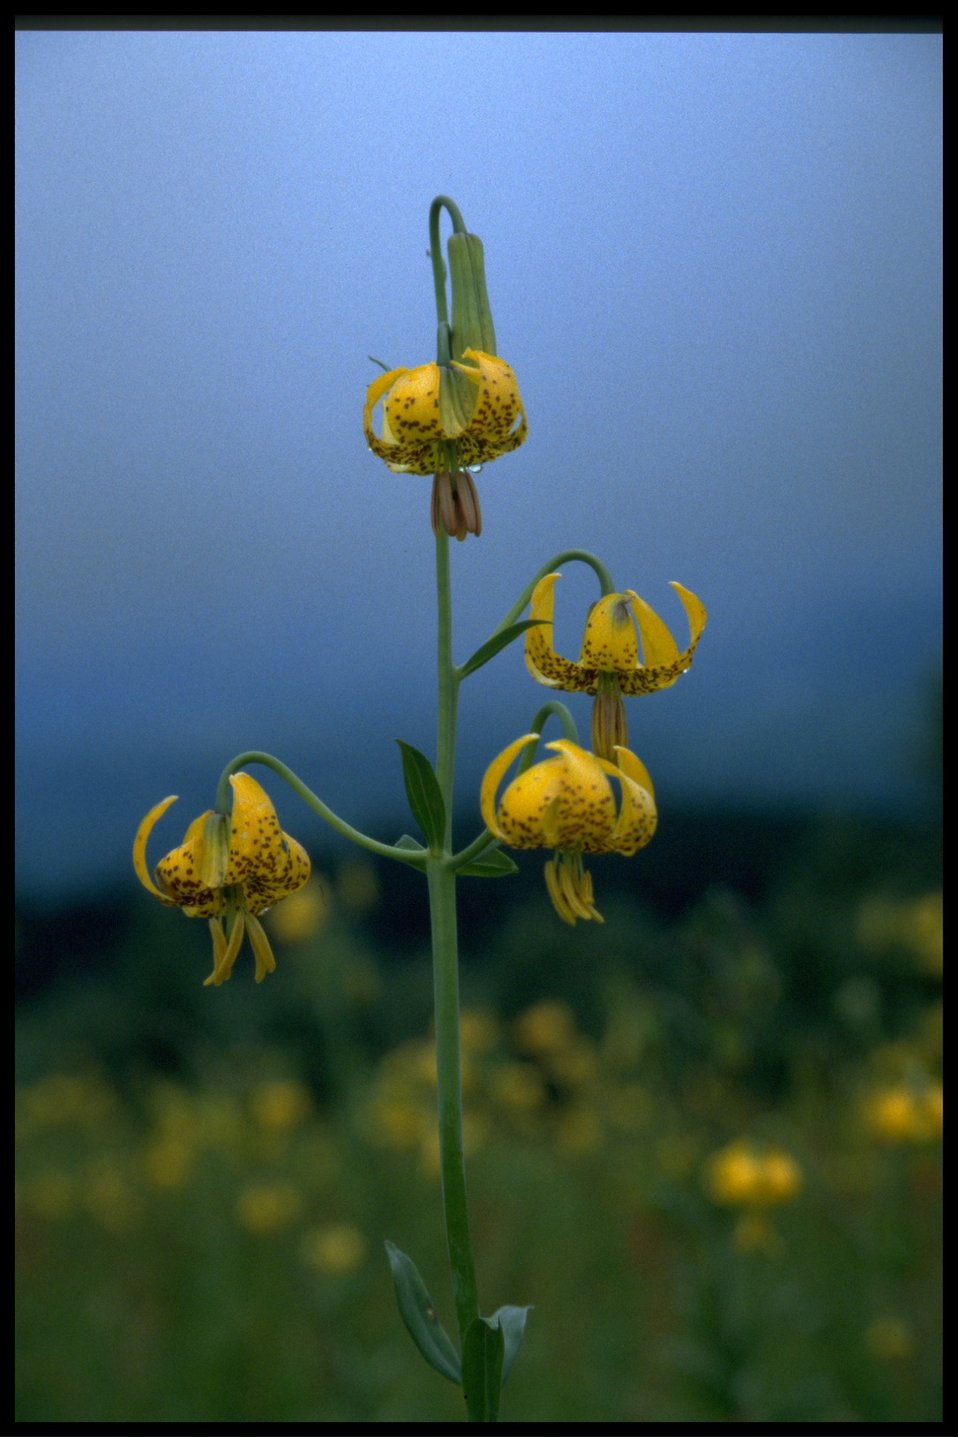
Medium shot of tiger lily, Lilium columbianum.